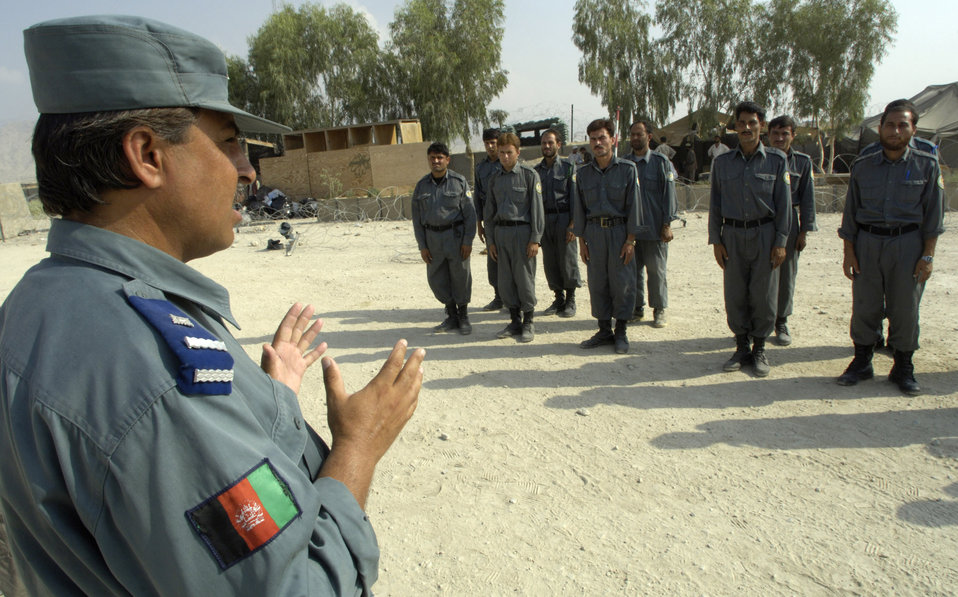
Afghans train Afghans with American mentorship

Afghan National Police Capt. Muhammad Ajan explains proper reporting procedures to Afghan National Auxiliary Police trainees during drill practice Sept. 3 at Forward Operating Base Mehtar Lam in Afghanistan's Laghman province. Afghan National police instructors are teaching the course on their own for the first time. Laghman is the first Afghanistan province to have Afghan instructors teaching an ANP course. The ANP instructors were competitively selected and completed an instructor development course taught at a regional training center.